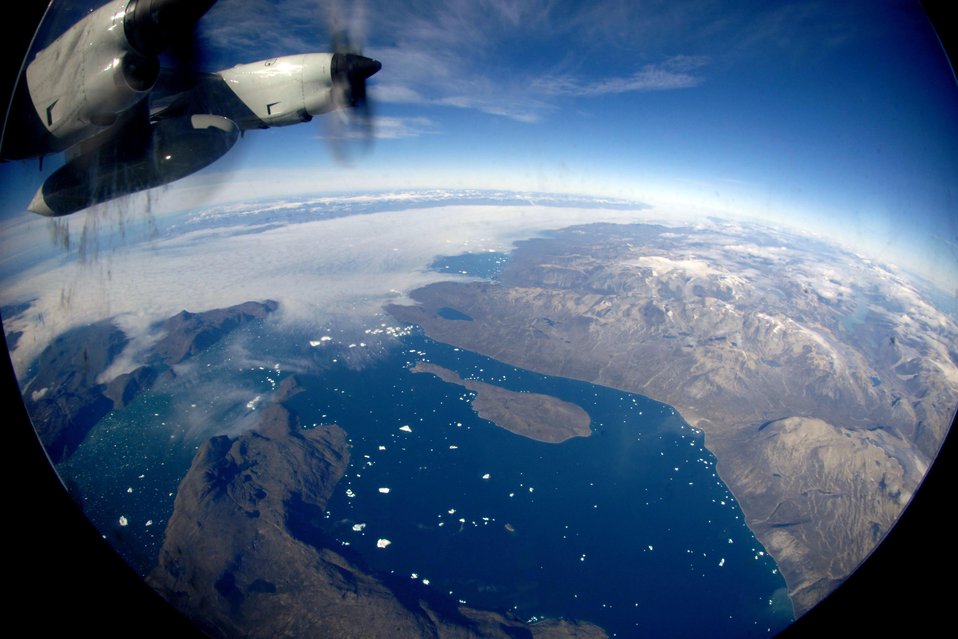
Polar research

An LC-130 Hercules from the New York Air National Guard's 109th Airlift Wing based out of Scotia, N.Y., flies July 28, 2010, over Greenland, on a mission to resupply the remote science research outposts there. The 109th Airlift Wing is the only military unit in the world to fly such aircraft and has flown missions to Greenland since 1975. The unit now provides airlift support to the National Science Foundation's polar research program here.